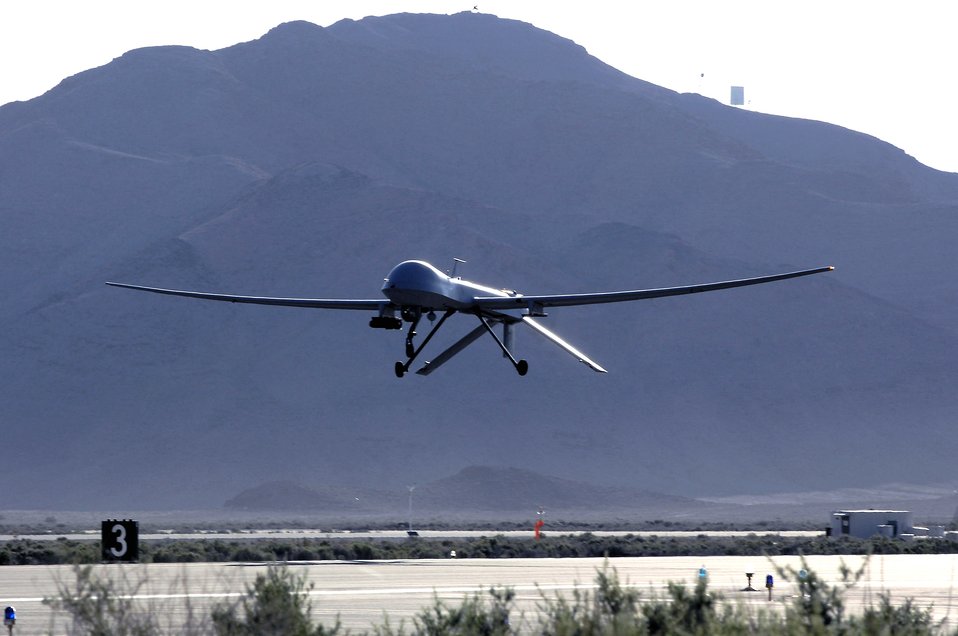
MQ-1B Predator

The primary mission of the MQ-1 Predator is interdiction and conducting armed reconnaissance against critical, perishable targets. When the MQ-1 is not actively pursuing its primary mission, it provides reconnaissance, surveillance and target acquisition in support of the Joint Forces commander.